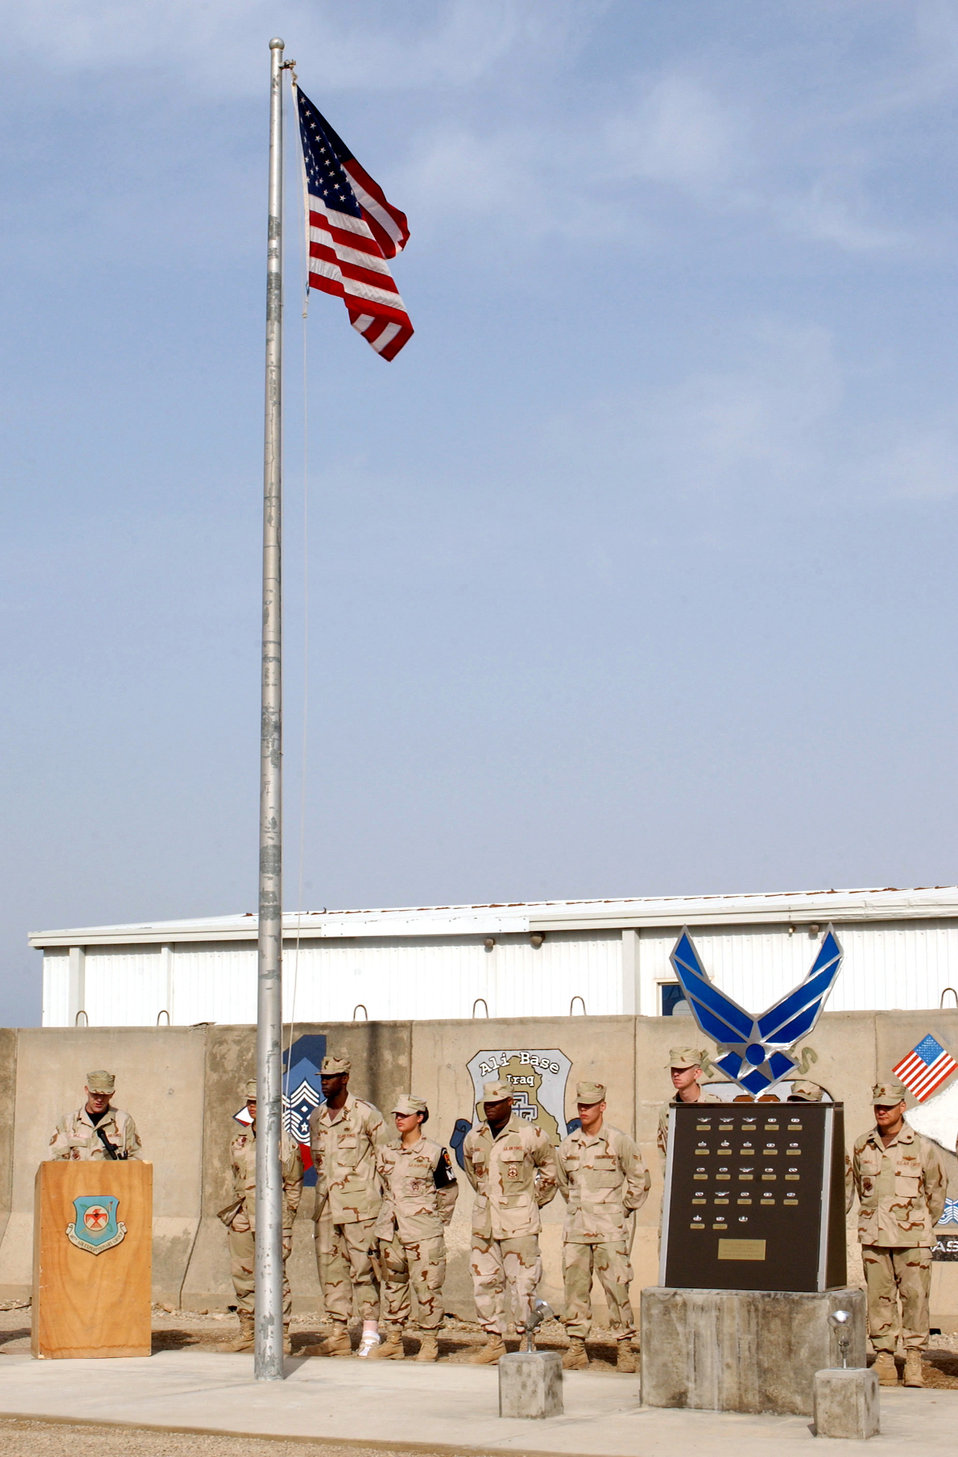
Fallen Airman Memorial recognized

Airmen from the 407th Air Expeditionary Group take part in a recognition ceremony for the Fallen Airman Memorial at Ali Base, Iraq, on Wednesday, April 26, 2006.